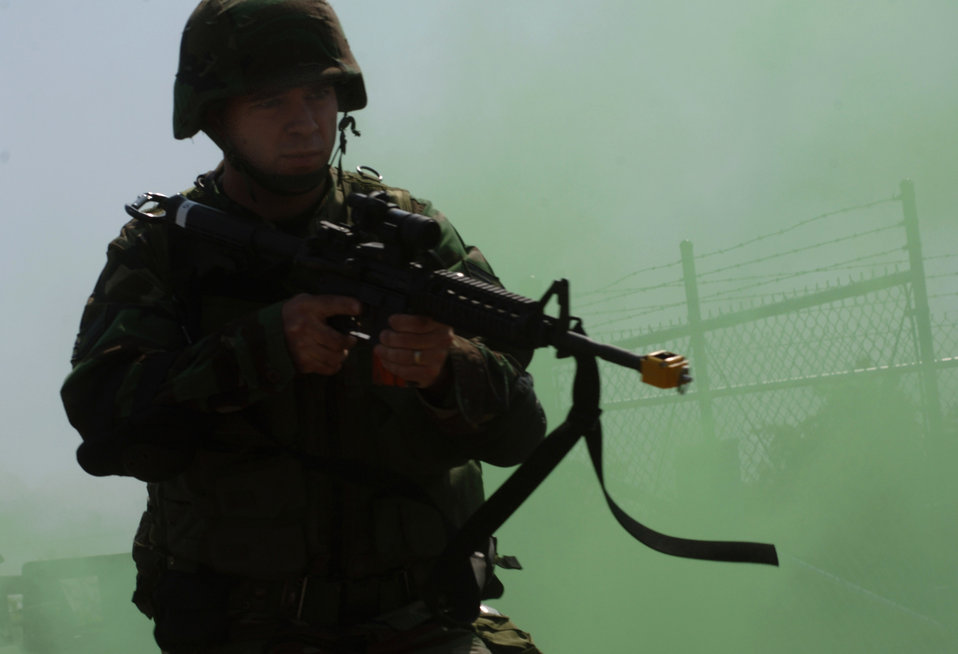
Unique mission: Guarding 91st Space Wing missile complex

A tactical response team member enter a Minuteman III launch training facility during a coordinated security training exercise, Aug. 22. The team will move across the area after a simulated grenade attack that should clear the area of living enemy attackers. They remain ready for any possible tricks, traps or explosive devices that the opposition force may have left for them. All personnel are with the 91st Security Forces Group, Minot Air Force Base, N.D.